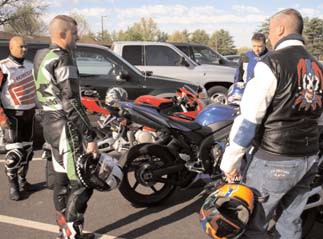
Eye in the sky protects ground forces

BALAD AIR BASE, Iraq -- Airmen taxi an MQ-1 Predator unmanned aerial vehicle. The aircraft provides intelligence, surveillance, reconnaissance and strike capability.